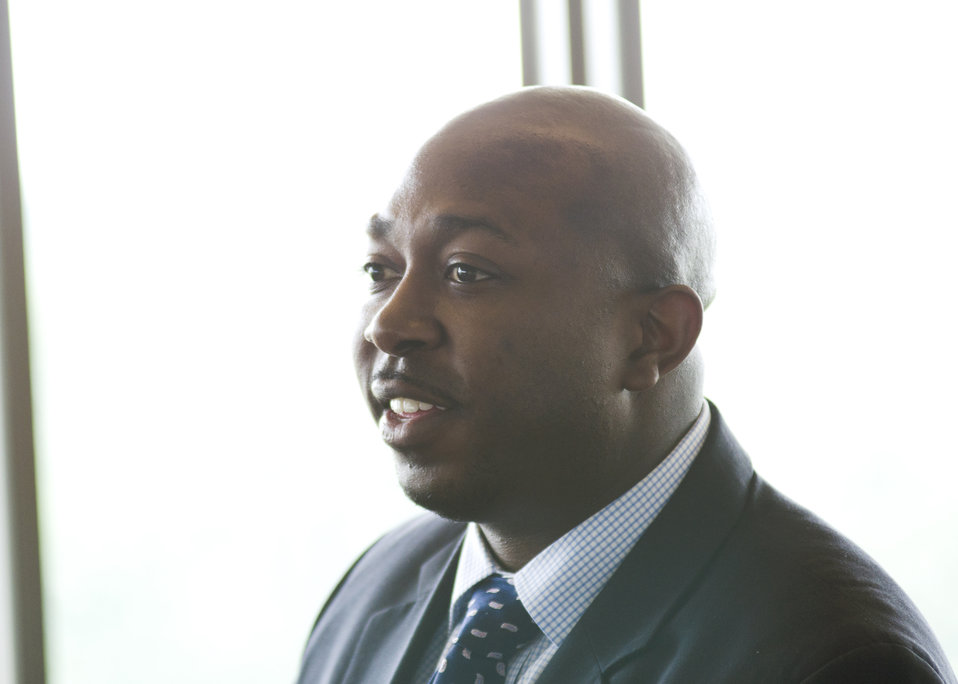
U.S. Department of Agriculture (USDA) Deputy Under Secretary for Farm and Foreign Agricultural Service (FFAS) Karis Gutter speaks at the conclusion of the first business meeting of USDA’s Council for Native American Farming and Ranching (CNAFR) held at the National Museum of the American Indian in Washington, D.C., on Wednesday, Aug. 15, 2012. CNAFR was created to advise the Secretary on ways to eliminate barriers to participation for Native American Farmers and Ranchers in USDA programs. The Council was established as part of the Keepseagle settlement, and is conducted under the oversight of USDA's Office of Tribal Relations under the Office of the Secretary of Agriculture.